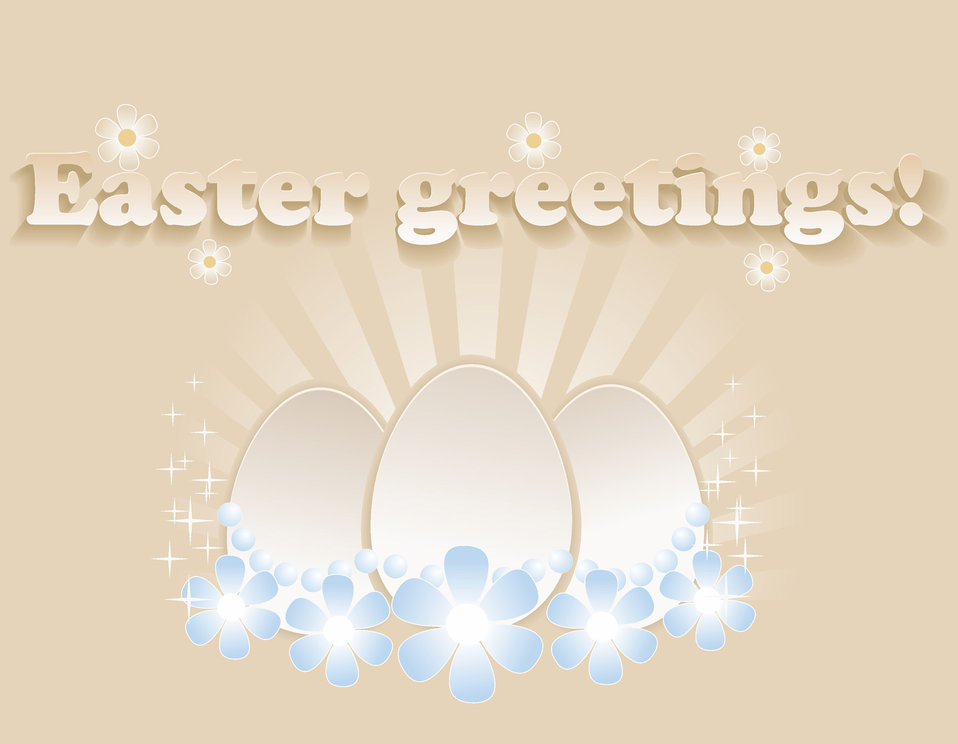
Easter greetings!

Card for easter.